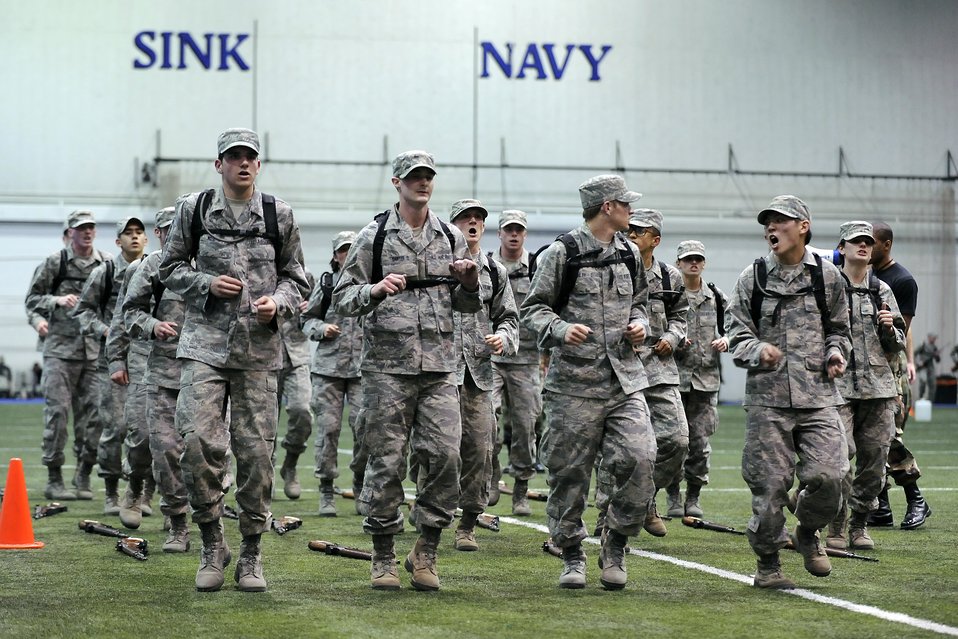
US Air Force Academy, CO

Calisthenics are performed on the assault course in the Cadet Field House during Recognition. Recognition marks the transition of the fourth classmen to upper class status. It is the ceremonial acknowledgement that the fourth class has successfully met the training requirements expected of it, and is prepared to continue its four-year journey through the Academy.